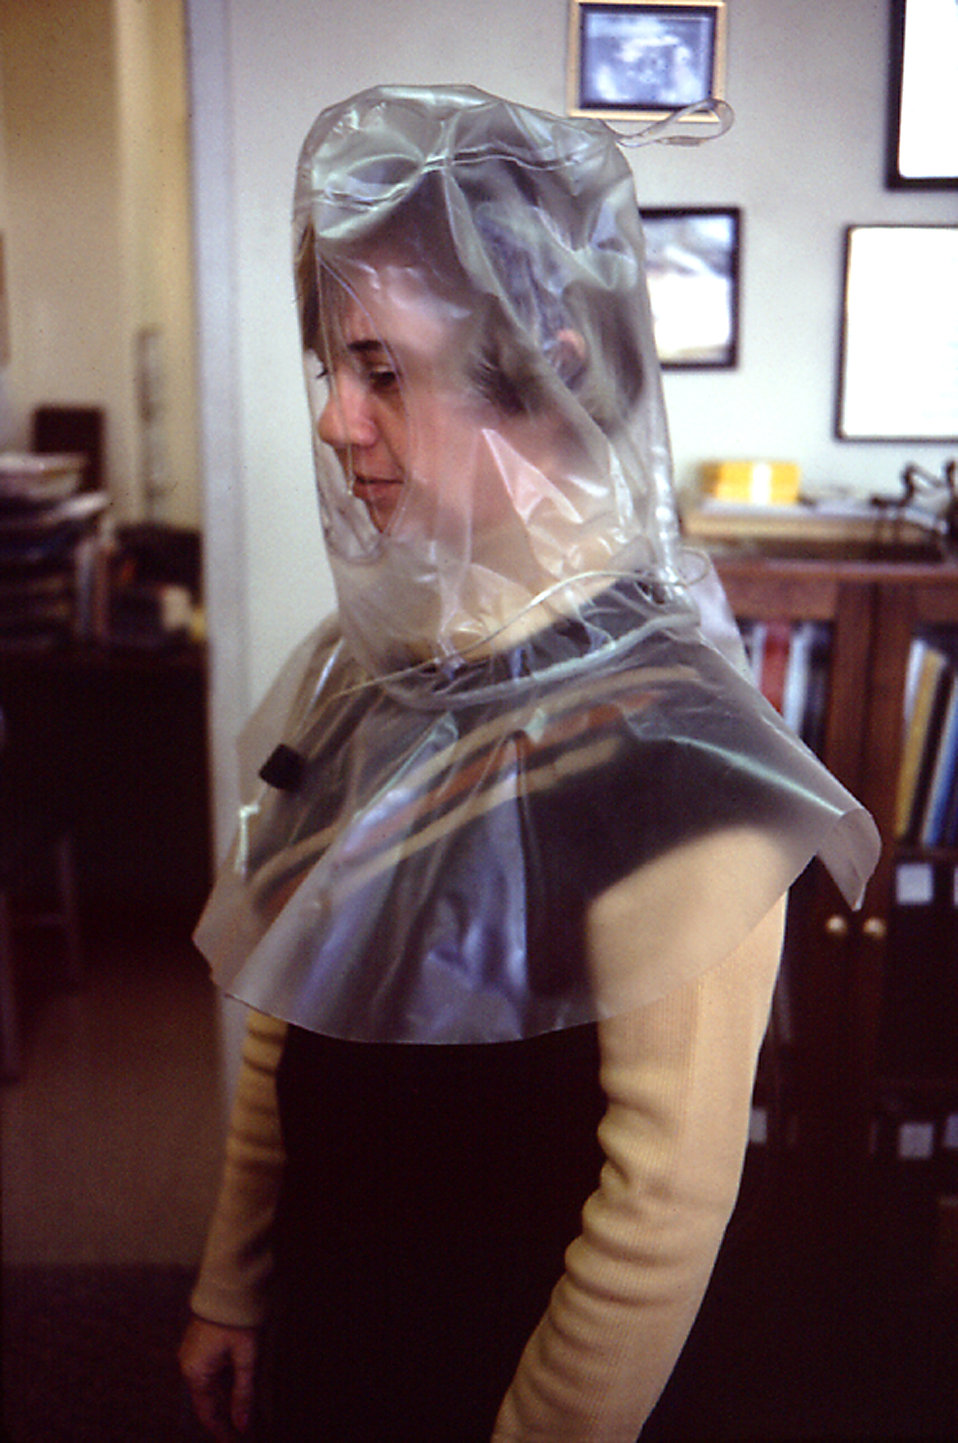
This photograph shows CDC employee, Sara James, modeling 1976 protective headgear to be used by participants in hazardous field studies.